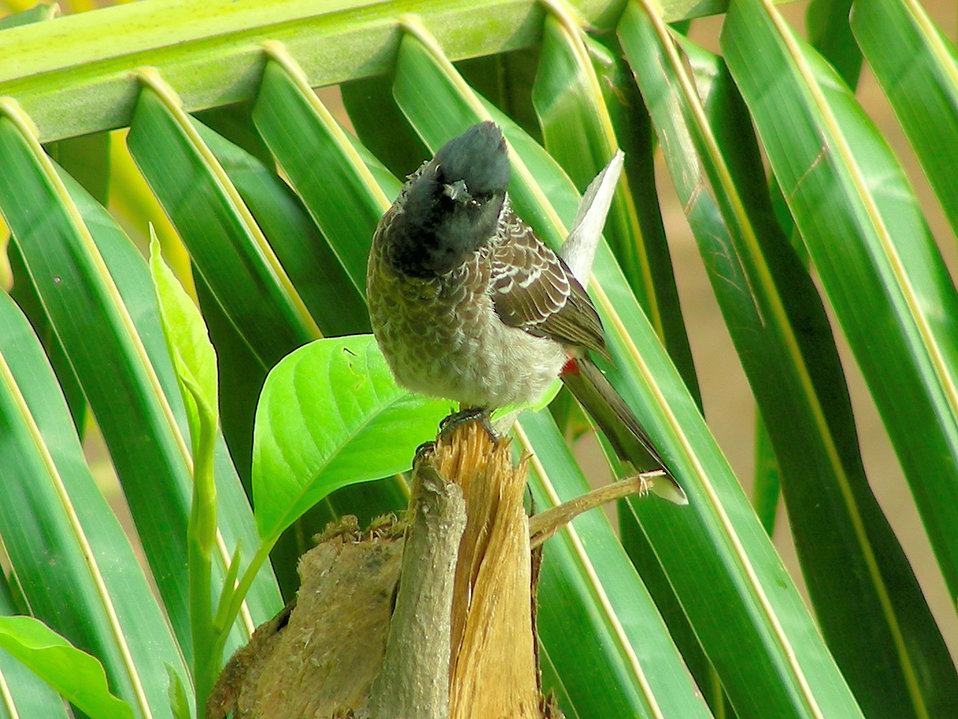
A Red-vented Bulbul